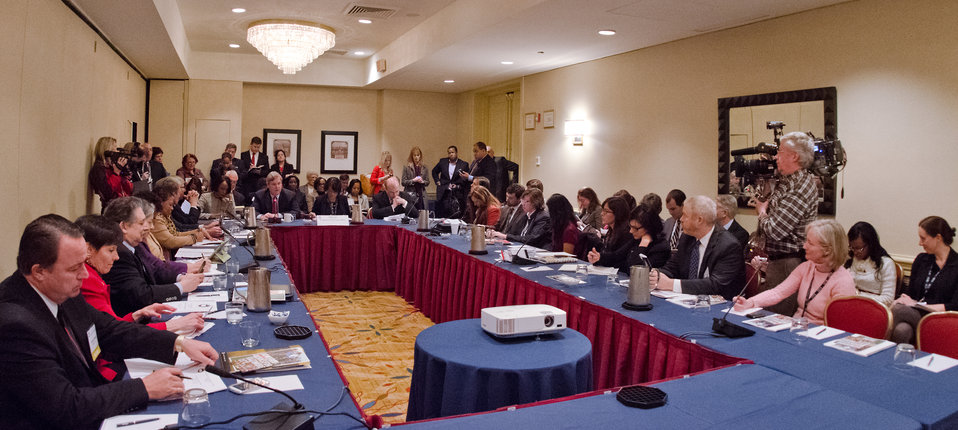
Agriculture Secretary Thomas Vilsack (end table, red tie) addresses the United States Conference of Mayors, 81st Winter Meeting, Food Policy session with Leadership for Healthy Communities Director Maya Rockeymoore-Cummings, to his left at end table; Mayor of Baltimore and Vice Chair U.S. Conference of Mayors Stephanie Rawlings-Blake, to his right; and U.S. Representative Jim McGovern, in Washington D.C., on Thursday, Jan 17, 2013.